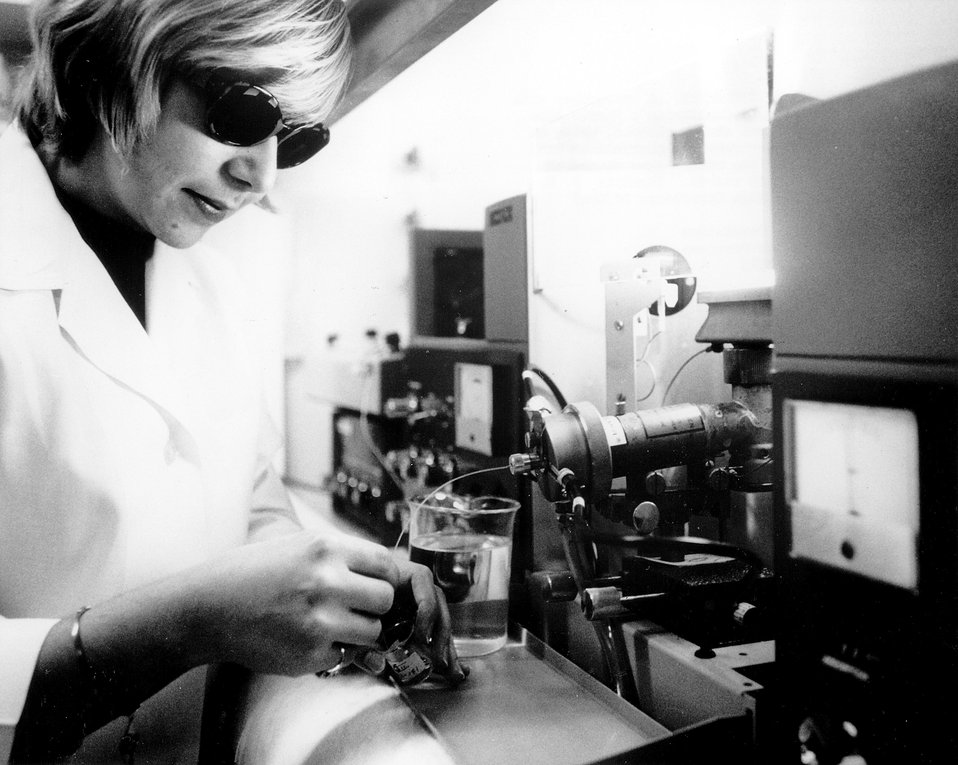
A researcher with the U.S. Atomic Energy Commission's Puerto Rico Nuclear Center performs a stable element, using an atomic absorption spectrometer, analysis on biological material and sea water taken aboard the R.F. Palumbo research vessel. Circa 1972.